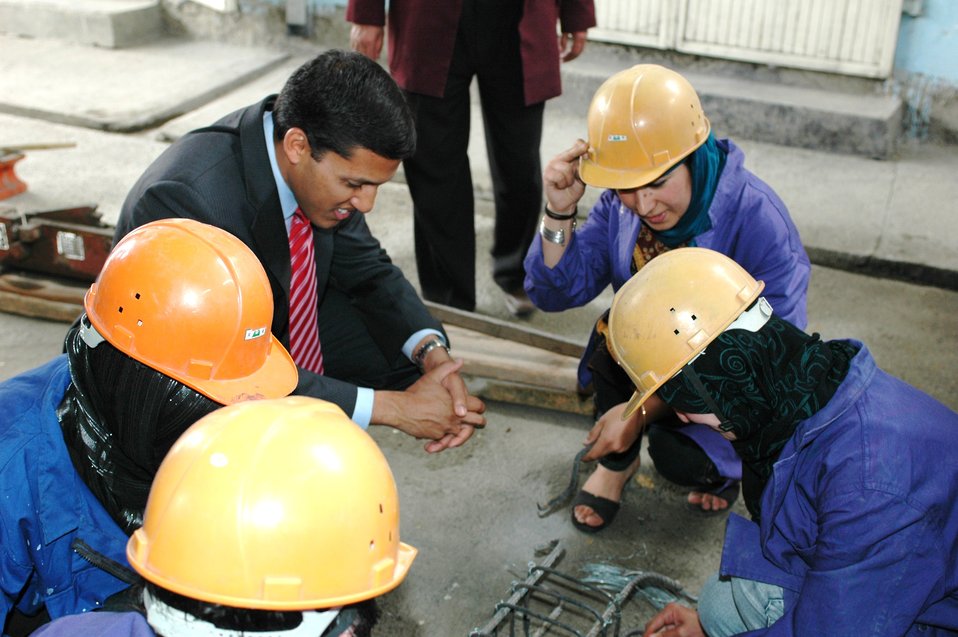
Dr Shah Visits Votech in Kabul